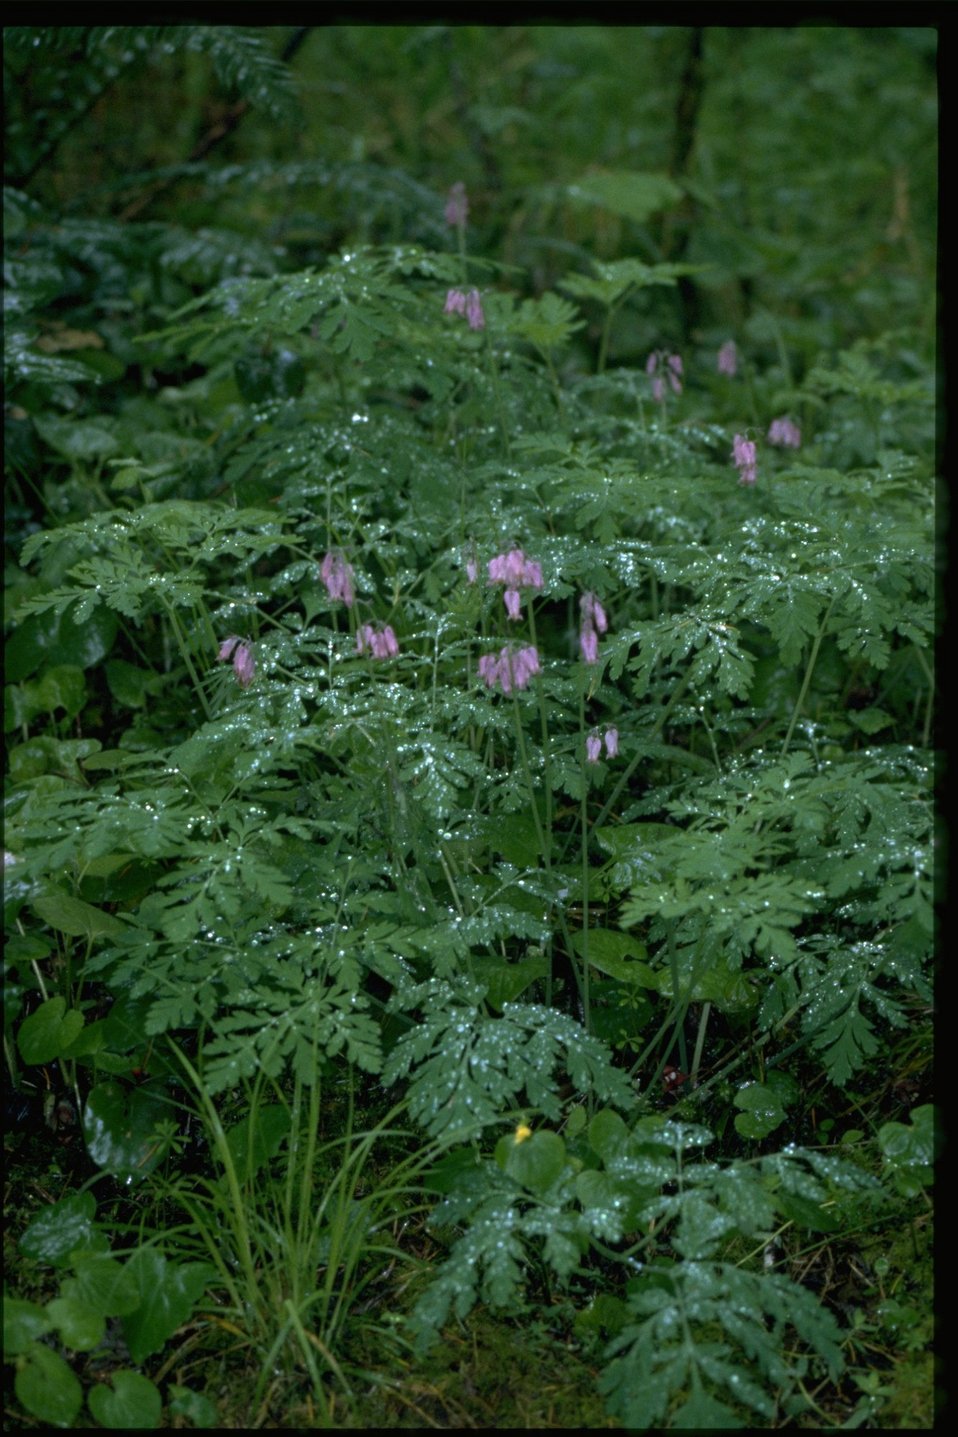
Medium shot of Pacific Bleeding Heart wildflowers (Dicentra formosa).